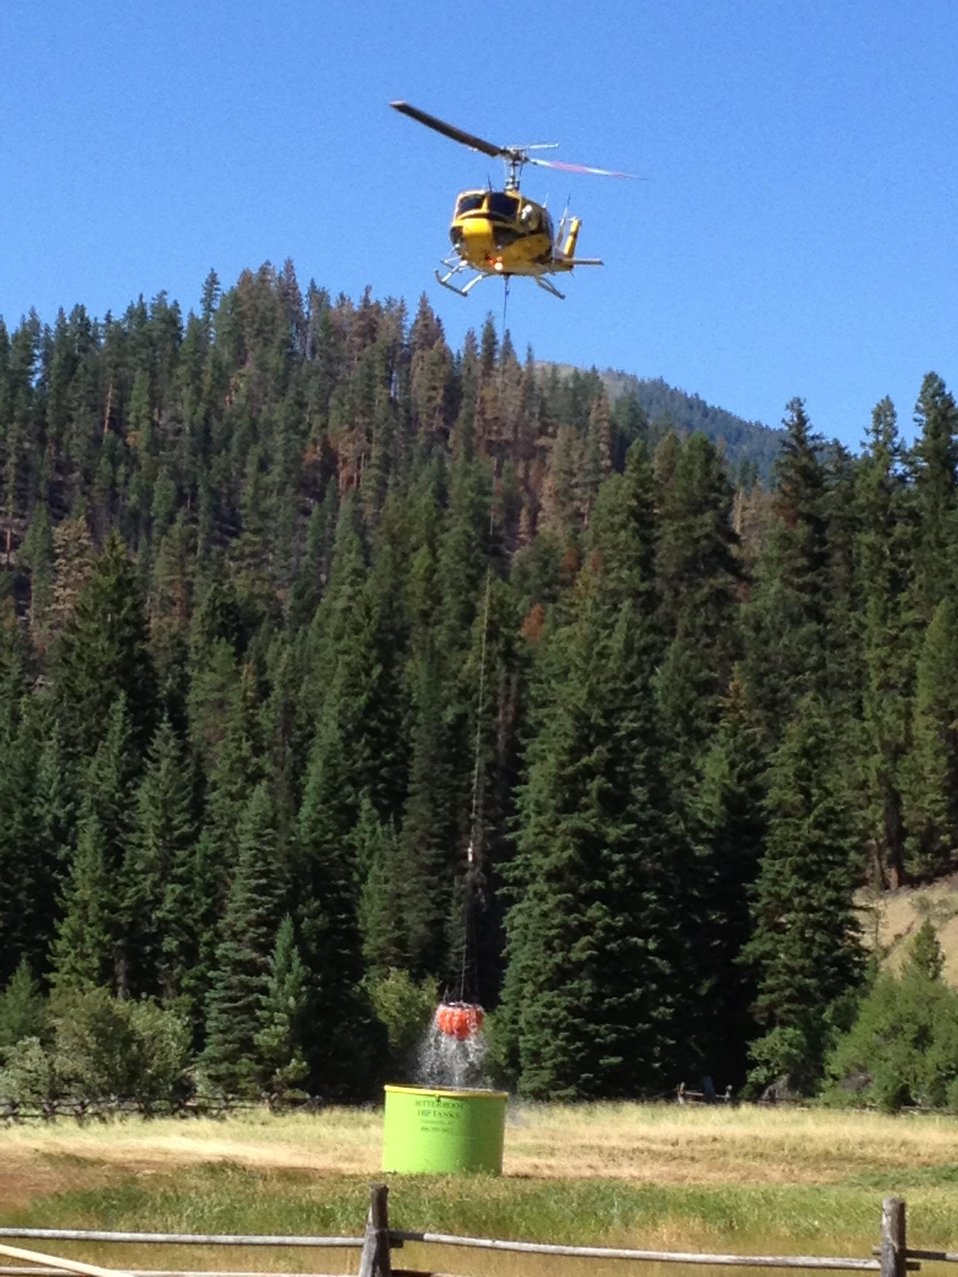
A helicopter refills its bucket with water from portable dip tank at the Gold Pan Fire. The Gold Pan Fire in the Bitterroot National Forest near Conner, MT began by lightning on Jul. 16, 2013 by lighting have consumed approximately 16,412 acres.